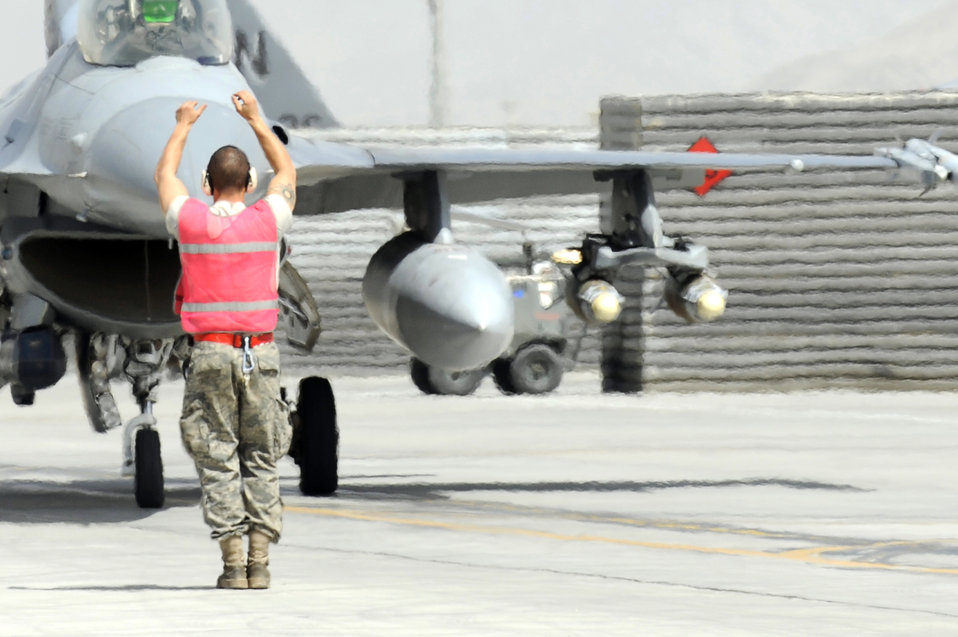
30 Code 1 flights

Staff Sgt. Lucas Inboden, a crew chief from the 34th Expeditionary Fighter Squadron at Bagram Airfield, Afghanistan, recovers this F-16 Fighting Falcon March 23, 2010, after it completed its 30th code 1 flight, meaning no maintenance write-ups for 30 flights in a row. Sergeant Inboden is deployed from Hill Air Force Base, Utah.